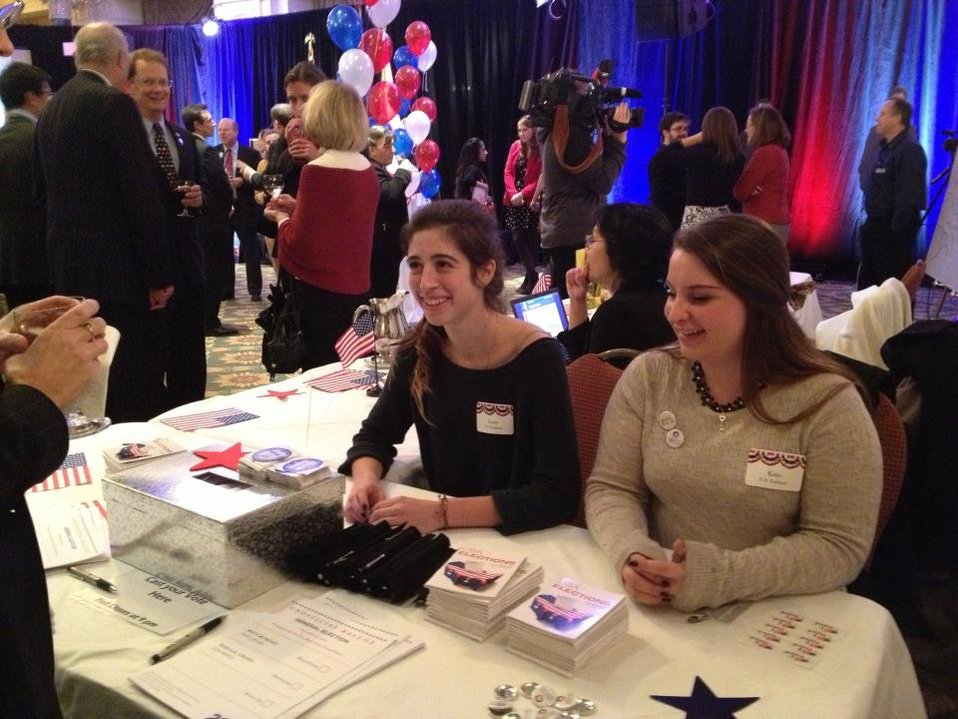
Participants Monitor the Unofficial Ballot Box in Ottawa

Participants monitor the unofficial 2012 ballot box at the U.S. Embassy in Ottawa, Canada's 2012 Election Night Event at the at the Chateau Laurier in Ottawa, November 6, 2012.